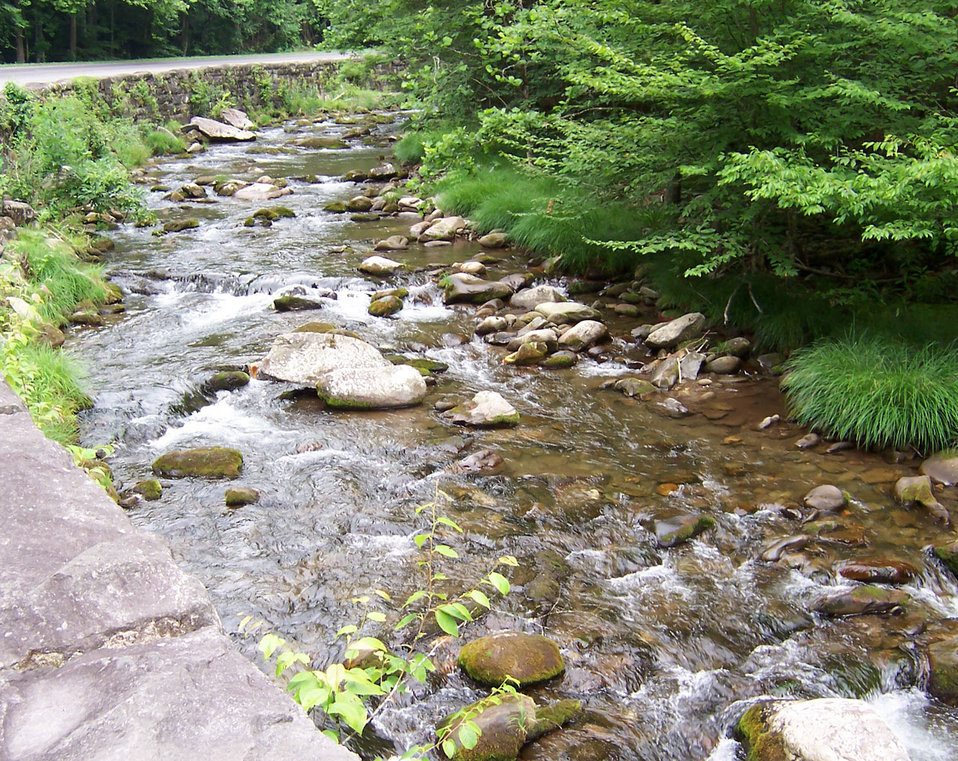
Neal floyd

Stream in the smoky mountains.